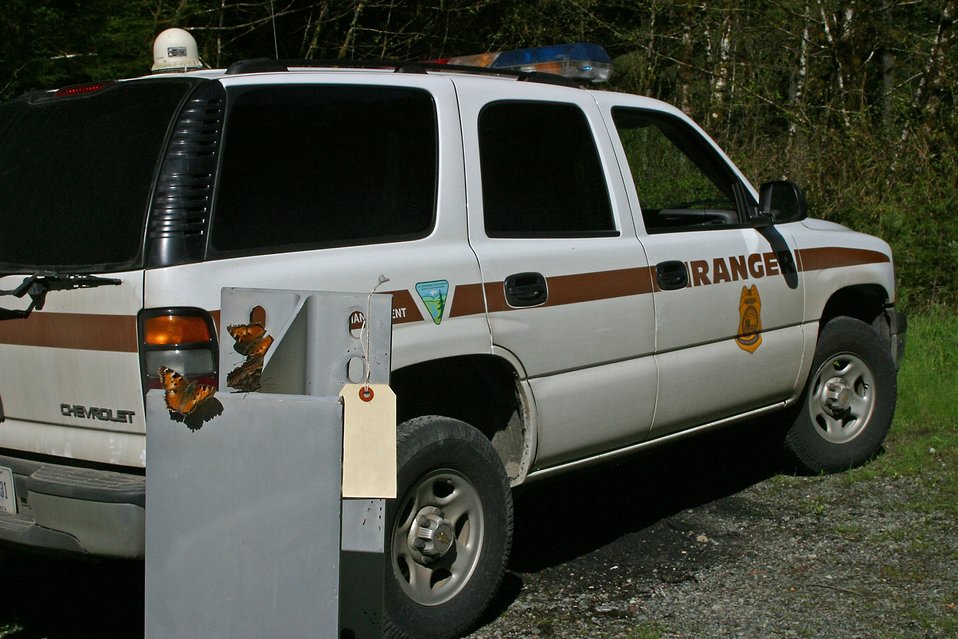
Spring butterflys flock to a piece of aluminum gaurdrail upright held in evidence from the Lyon's abridge theft.